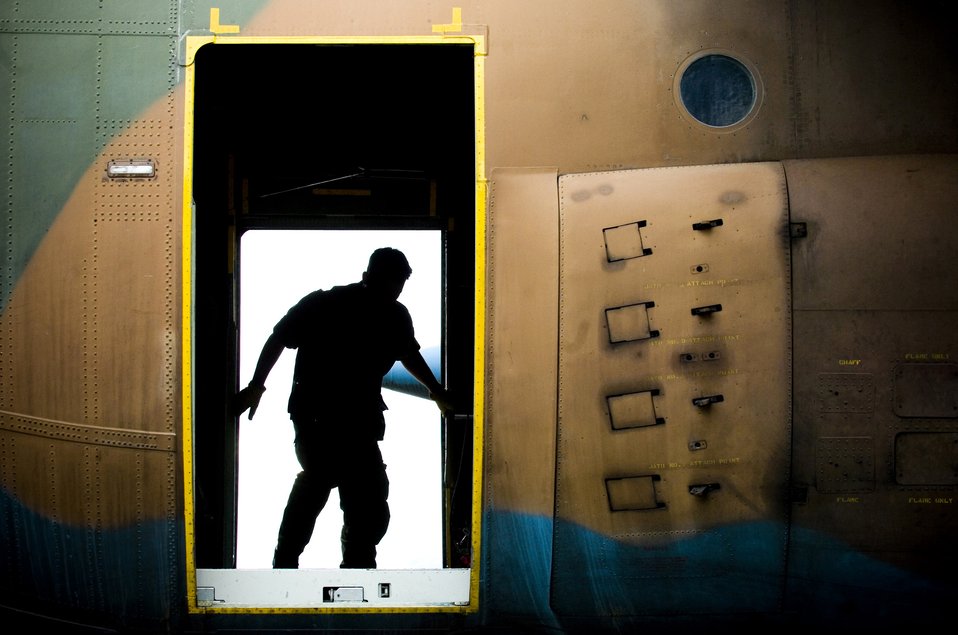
Elmendorf, coalition forces hone skills at Red Flag-Alaska

Spanish air force Senior Airman Jesus Utrilla moves about the tail section of a Spanish air force C-130 gathering equipment to secure the aircraft after landing July 23 at Elmendorf Air Force Base, Alaska. More than 80 aircraft and 1,500 servicemembers from the six countries are flying together in this multinational exercise that provides realistic combat training in a safe and controlled setting over the Pacific Alaskan Range Complex and Eielson AFB, Alaska. Airman Utrilla is a C-130 mechanic.